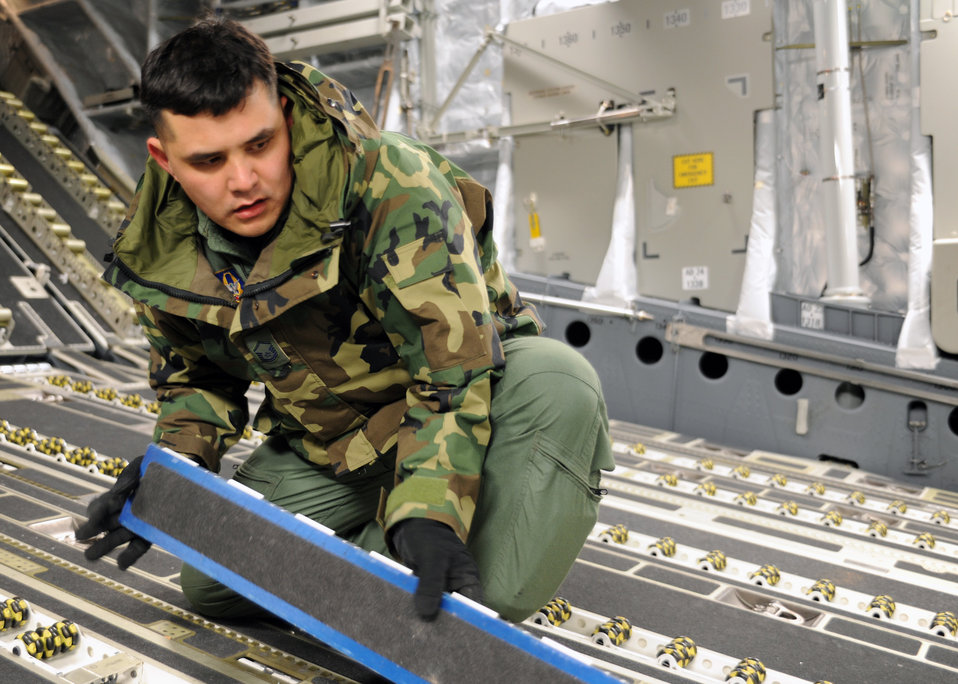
Haiti Humanitarian Effort

Master Sgt. Michael Lang flips the roll bars on a Charleston C-17 at Joint Base McGuire-Dix-Lakehurst, New Jersey, Jan. 15, 2010. The Haiti-bound C-17 was loaded for humanitarian relief efforts. Air Mobility Command responded immediately to the disaster.